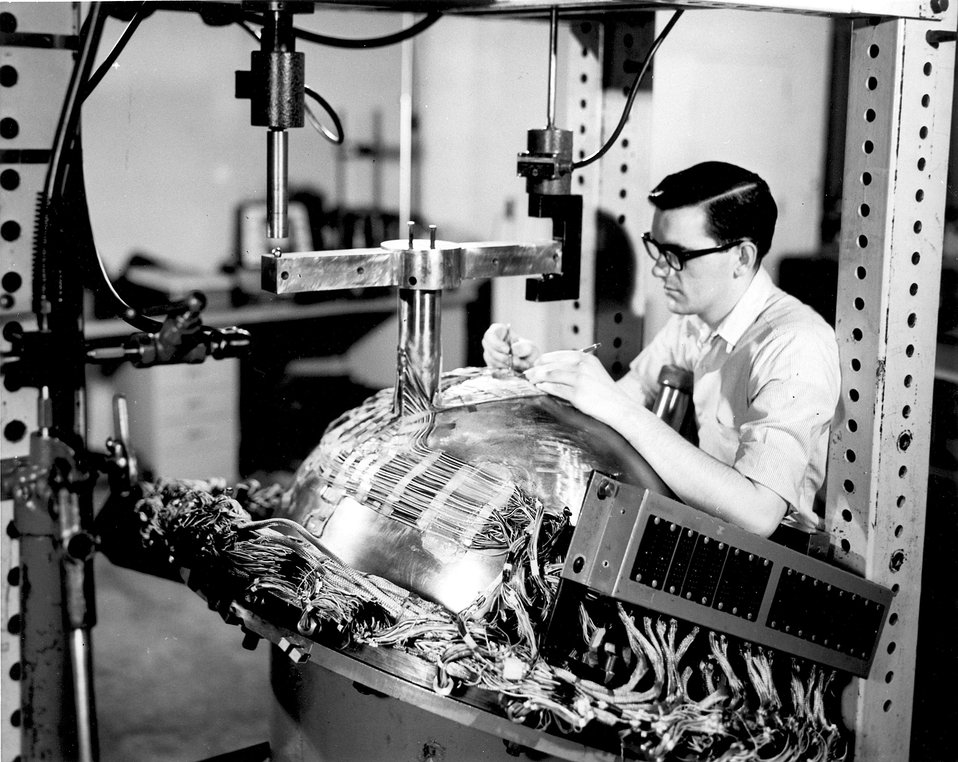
The investigation of stress in nuclear power reactor pressure vessels is a part of the USAEC's Oak Ridge National Laboratory's (ORNL) program of reactor safety. c. 1971